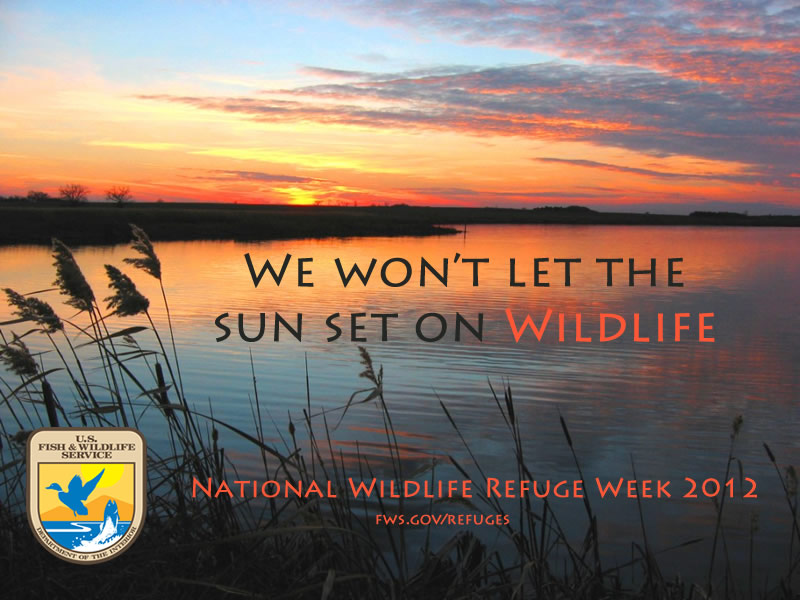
We Won't Let the Sun Set on Wildlife

Sunset at J. Clark Salyer National Wildlife Refuge in North Dakota.